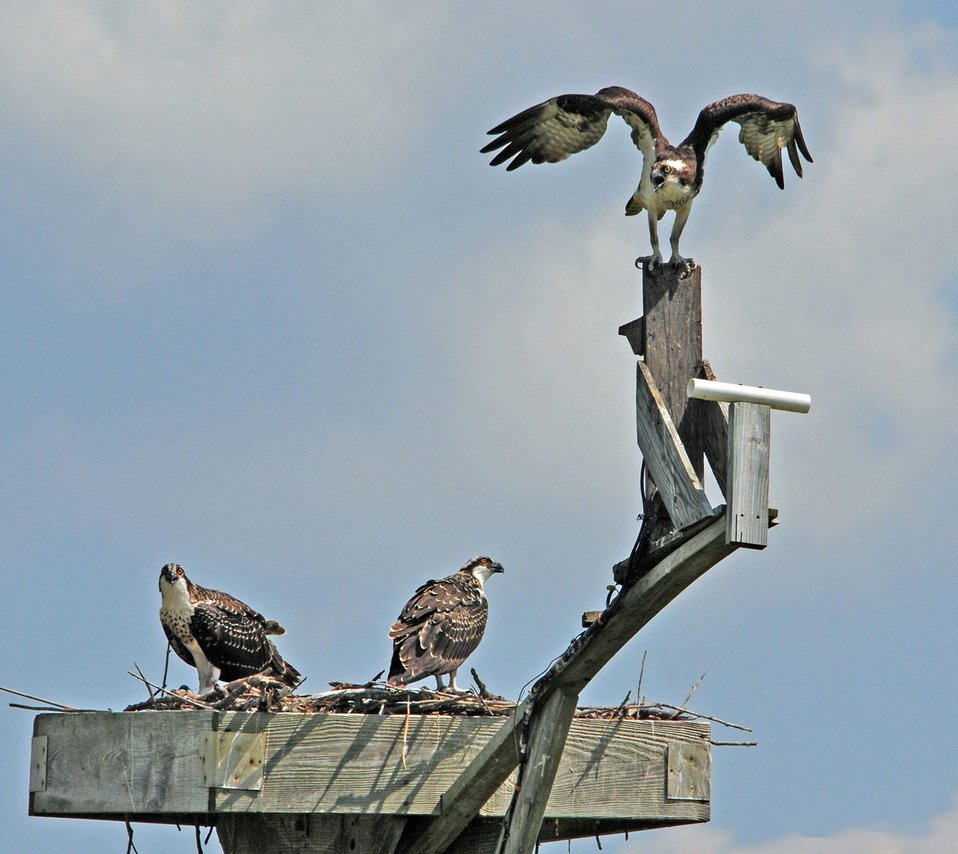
Ospreys at Blackwater

Ospreys perch on a nest at Blackwater National Wildlife Refuge in Maryland. A webcam located below the bird with opened wings gives a close-up view of nesting activity.